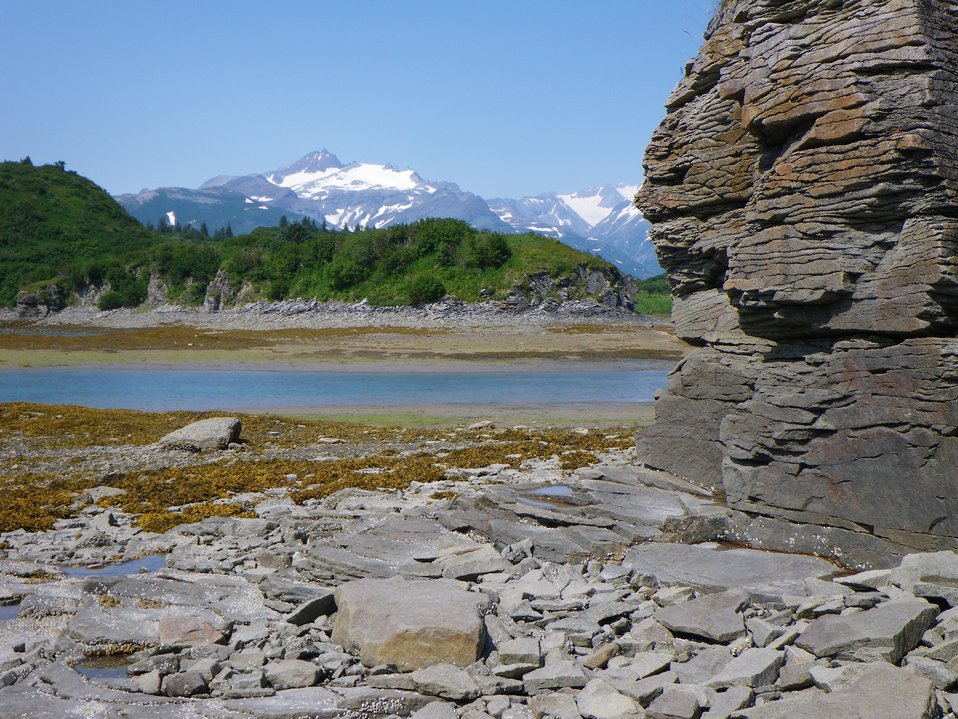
Kukak Bay at low tide. Appears to be at least 10 to 15 feet of tide with Kukak Bay at low tide. Appears to be at least 10 to 15 feet of tide with